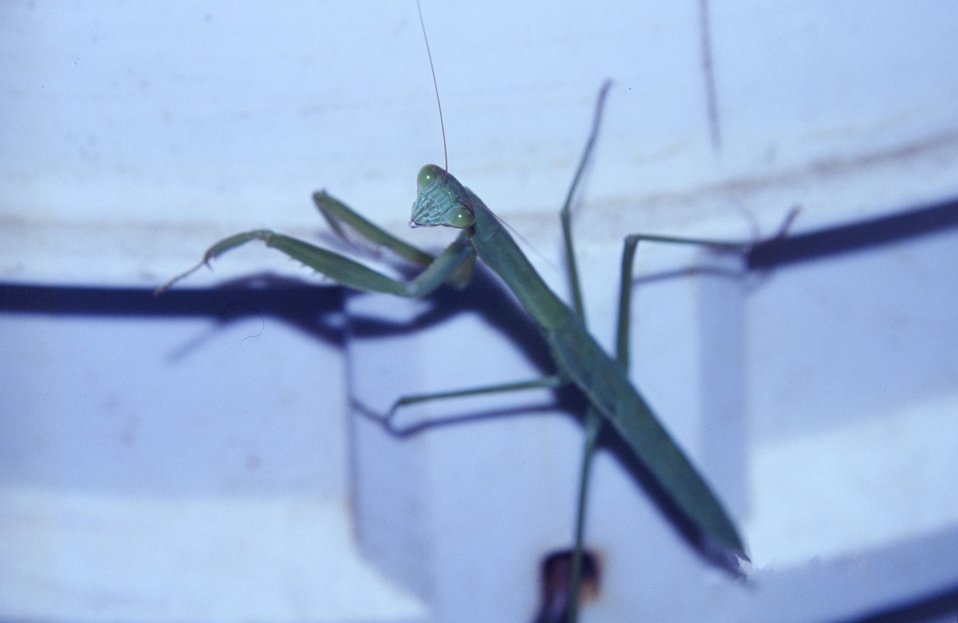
Praying mantis, Stagmomantis carolina (Johannson).